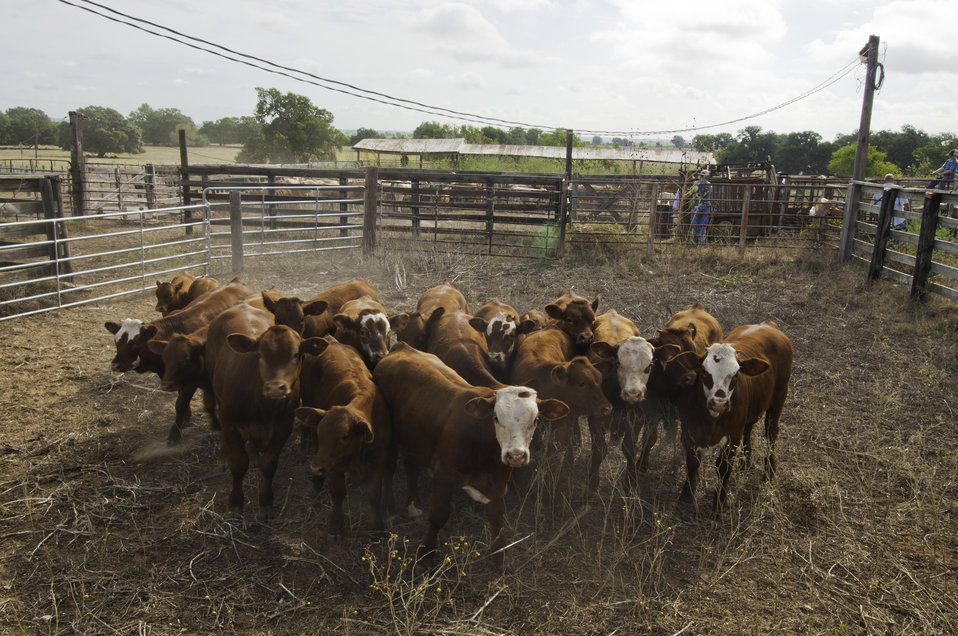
Cattle wait to be immunized on a Texas farm on Aug. 21, 2013.